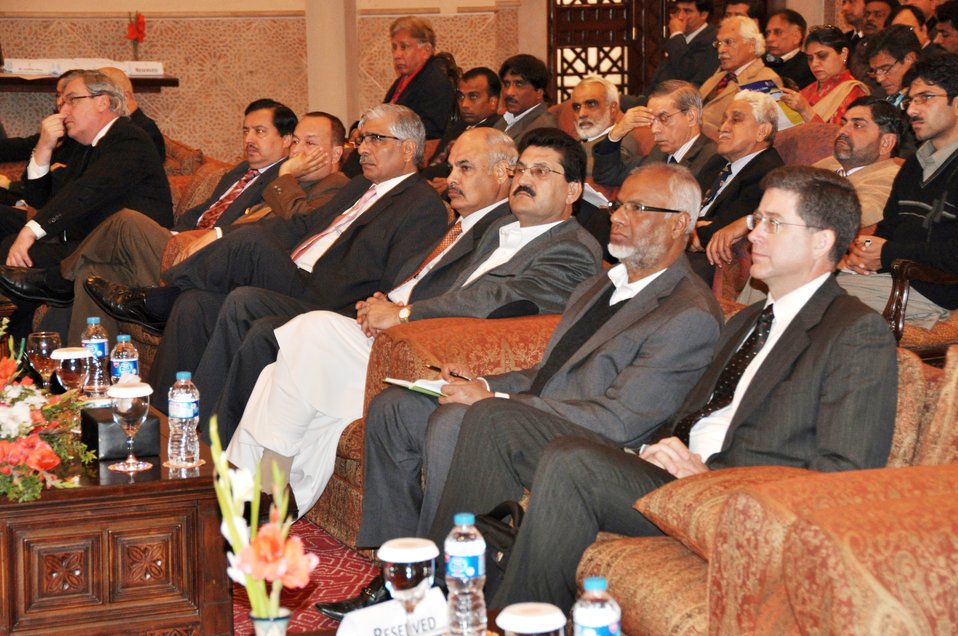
PHDS Launch

Speaking at the occasion, Ambassador Olson commented, “The rich data and findings from this robust survey will help the Government of Pakistan, provincial leaders, health officials, and development partners shape programs and policies to help improve the health of the Pakistani people.”